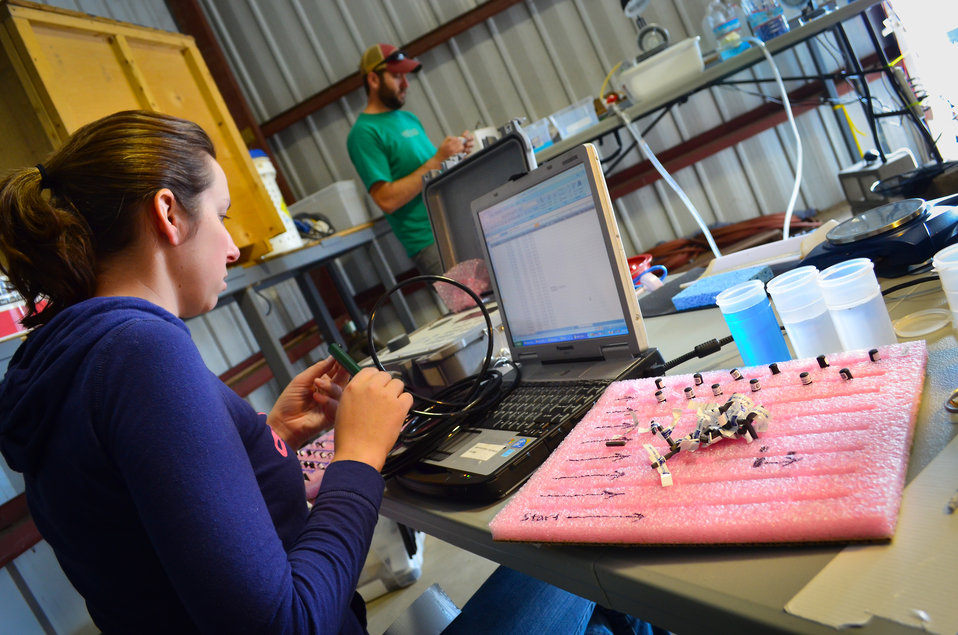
Activating acoustic fish tags

Natalie Houghton, an environmental specialist with the U.S. Army Corps of Engineers Sacramento District, uses a special magnet to activate acoustic fish tags prior to them being surgically implanted into 250 steelhead trout and late-fall Chinook salmon juveniles March 25-26, 2013, at the Coleman National Fish Hatchery in Anderson, Calif. The data obtained over a 75-mile stretch of the Sacramento River will help researchers better evaluate habitat restoration work under the Sacramento River Bank Protection Project, a joint flood risk reduction effort between the district and the state's California Central Valley Flood Protection Board to repair riverbank erosion along the Sacramento River and its tributaries. (U.S. Army photo by Todd Plain/Released) Watch the video: bit.ly/10MZ6GY